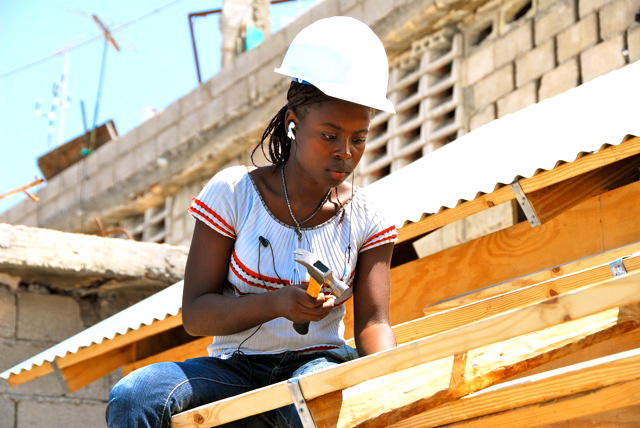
Haiti, One Year Later

In cooperation with other U.S. agencies and with support from Congress, Treasury also contributed $120 million to the Haiti Reconstruction Fund (HRF), a multi-donor fund administered by the World Bank, which is being used to fund priority areas defined by the Government of Haiti including housing reconstruction. The woman pictured is with the United Nations Office for Project Services (UNOPS), an agency implementing projects funded by the HRF.